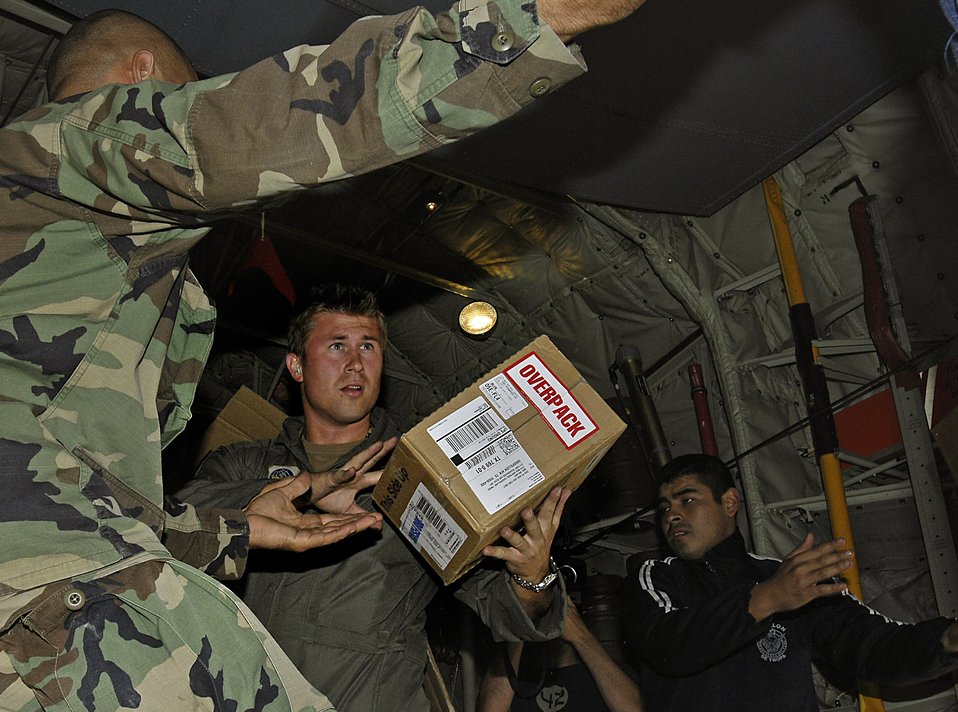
Peruvian support

Capt. Bart Robinson and Peruvian aid workers unload supplies from a C-130 Hercules Aug. 19 in Pisco, Peru. The supplies are for the victims of an 8.0 magnitude earthquake that hit parts of western Peru. Around 80,000 Peruvians have been affected by the earthquake, and 80 percent of the homes were destroyed in the city of Pisco. Captain Robinson is with the Maryland Air National Guard.